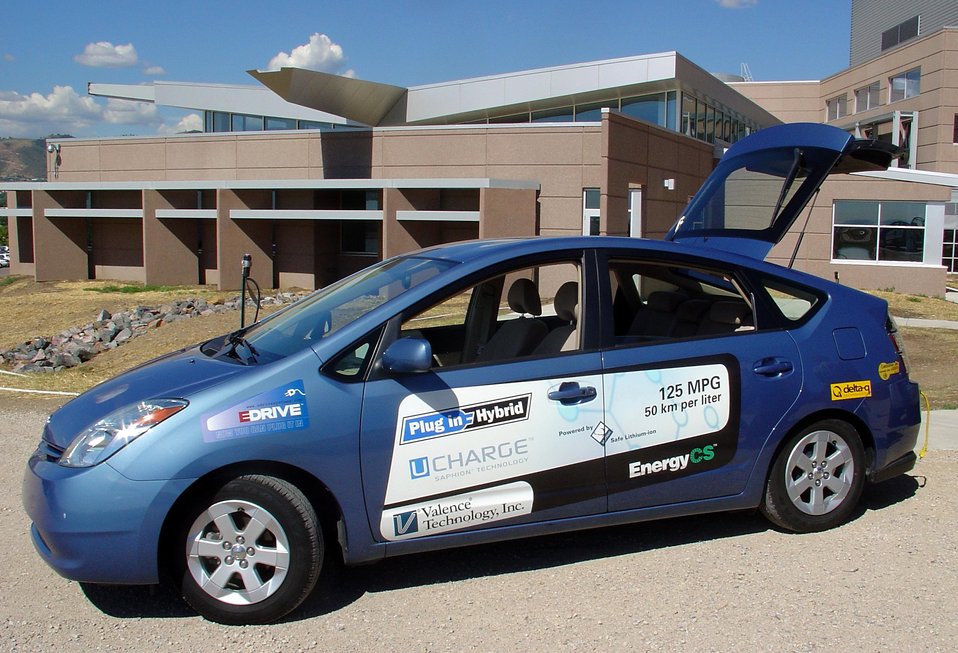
SHOWN IS A TOYOTA PRIUS THAT HAS BEEN CONVERTED INTO A PLUG-IN HYBRID ELECTRIC VEHICLE BY ENERGY CS.

AS PART OF THE ADVANCED VEHICLE SYSTEMS PROJECT AT NREL, ENERGY CS CONVERTED THIS TOYOTA PRIUS INTO A PLUG-IN HYBRID ELECTRIC VEHICLE (PHEV). THE PHEV HAVE A LARGER BATTERY PACK THEN STANDARD HYBRID ELECTRIC VEHICLES. THIS ALLOWS PLUG-IN HYBRIDS TO OPERATE GENERALLY ON ELECTRICITY FOR SHORT TRIPS. FOR LONGER TRIPS, A PLUG-IN HYBRID DRAWS FUEL FROM ITS ONBOARD TANK, WHICH PROVIDES COMPARABLE DRIVING RANGE AND PERFORMANCE TO A CONVENTIONAL PETROLEUM-FUELED VEHICLE. IT IS AN ELECTRIC BATTERY THAT CAN BE CHARGED BY PLUGGING ITS CORD INTO A STANDARD 110-VOLT OUTLET. A COMPUTER INSIDE THE VEHICLE DETERMINES WHEN IT'S MOST EFFICIENT FOR THE VEHICLE TO BE FUELED BY ELECTRICITY AND BY THE LIQUID FUEL (NOT NECCESSARILY PETROLEUM; MAY USE BIOFUELS)